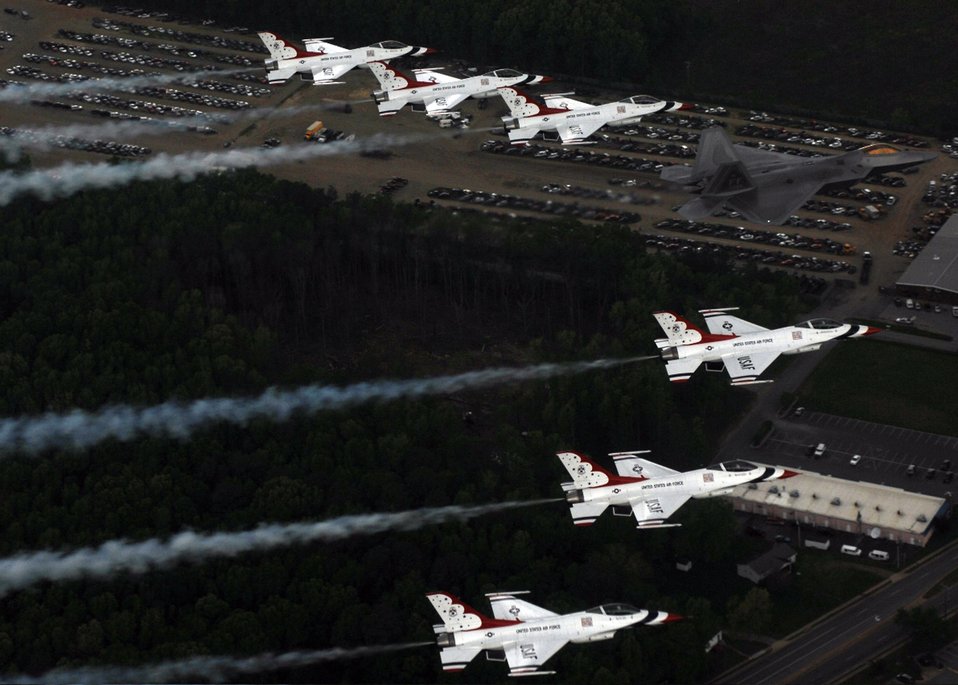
Raptor leads Thunderbirds over Langley

Maj. Max Moga, F-22A Raptor demonstration pilot, leads six Thunderbird F-16s in formation over Langley Air Force Base, Va., during their practice day April 27 for the Airpower Over Hampton Roads air show scheduled April 28-29. This year the Thunderbirds and the F-22 demonstrations commemorate the 60th Anniversary of the United States Air Force.